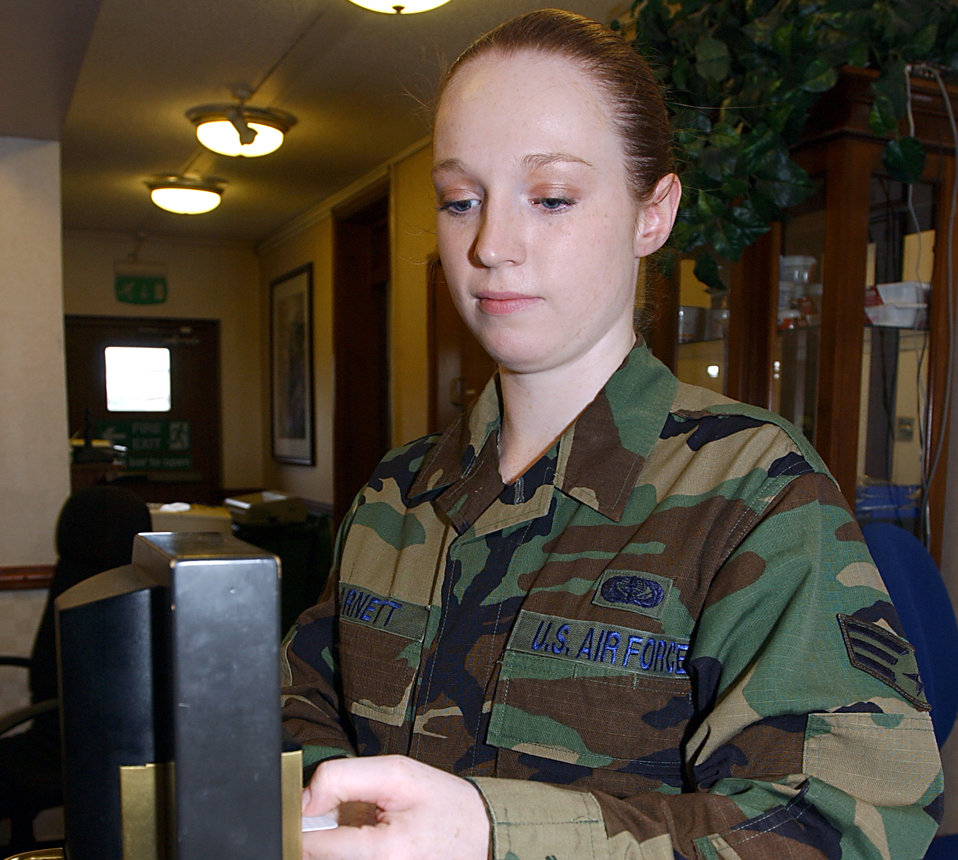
Front desk clerk stays busy during Air Force birthday

Senior Airman Abbragail Barnett tests a room key card in a fully working door handle device kept at the front counter of the Royal Air Force Lakenheath billeting office. Airman Barnett is a 48th Services Squadron desk clerk.